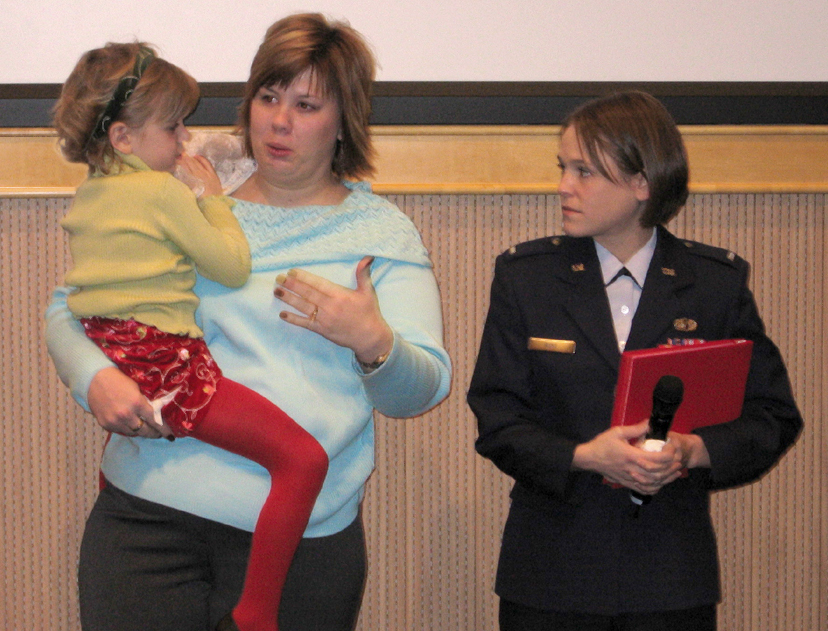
Malmstrom Airman gives gift of life

WASHINGTON -- First Lt. Janelle Rust (right) meets Rilee Bjerke and her mother, Nicole, during a bone marrow conference here. Lieutenant Rust donated bone marrow to the girl when she was 3 years old. The Airman is a missile officer assigned to the 12th Missile Squadron at Malmstrom Air Force Base, Mont.